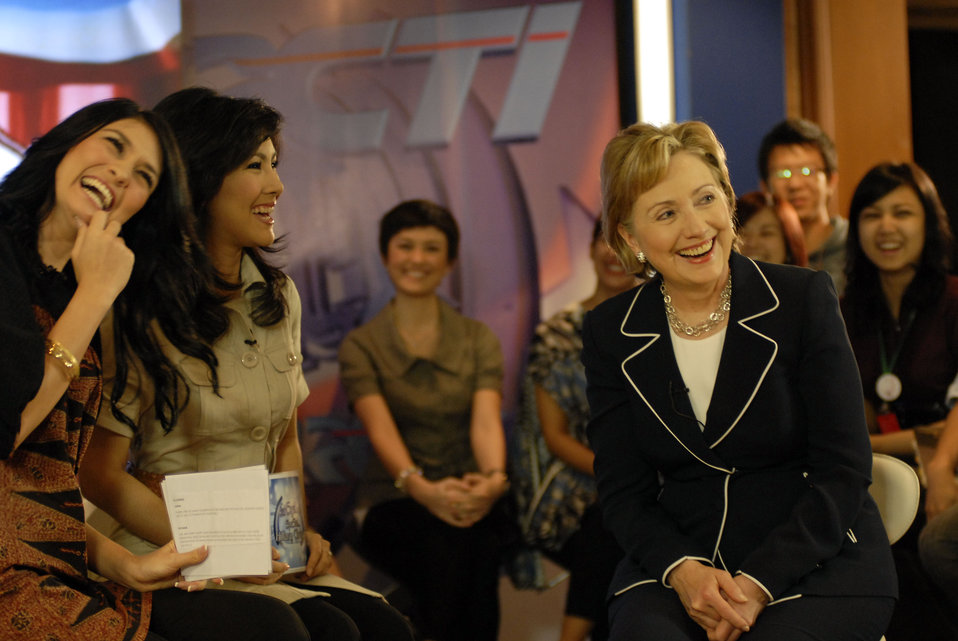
Secretary Clinton on Indonesian 'Dahsyat' TV Show

Hosts Luna Maya (left) and Isyana Bagoes Oka (center) interviews U.S. Secretary of State, Hillary Clinton on top rated Indonesian youth variety show “Dahsyat” (“Awesome”) in Jakarta, Indonesia February 19, 2009.